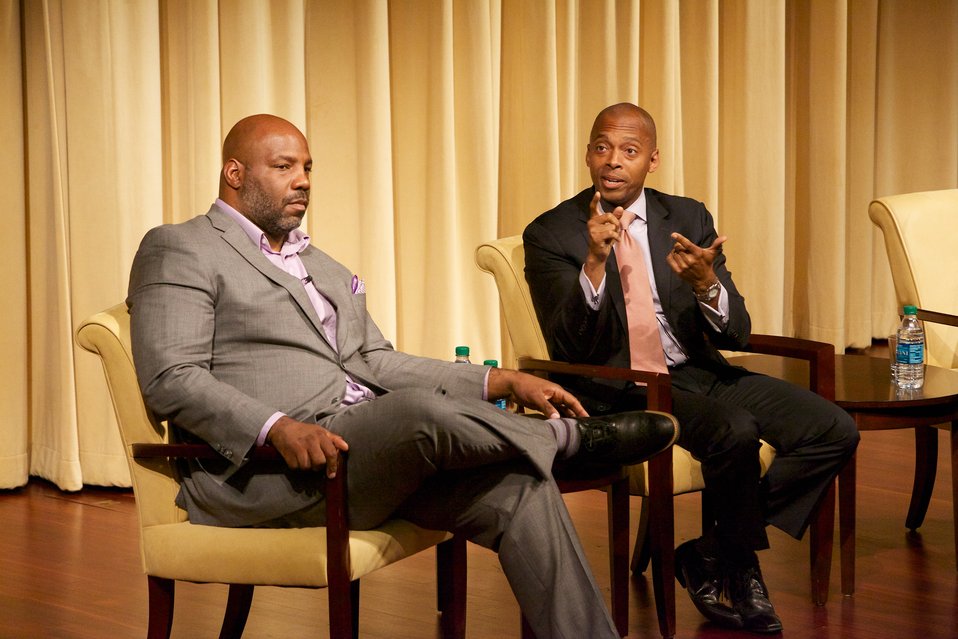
Solomon Northup's Odyssey